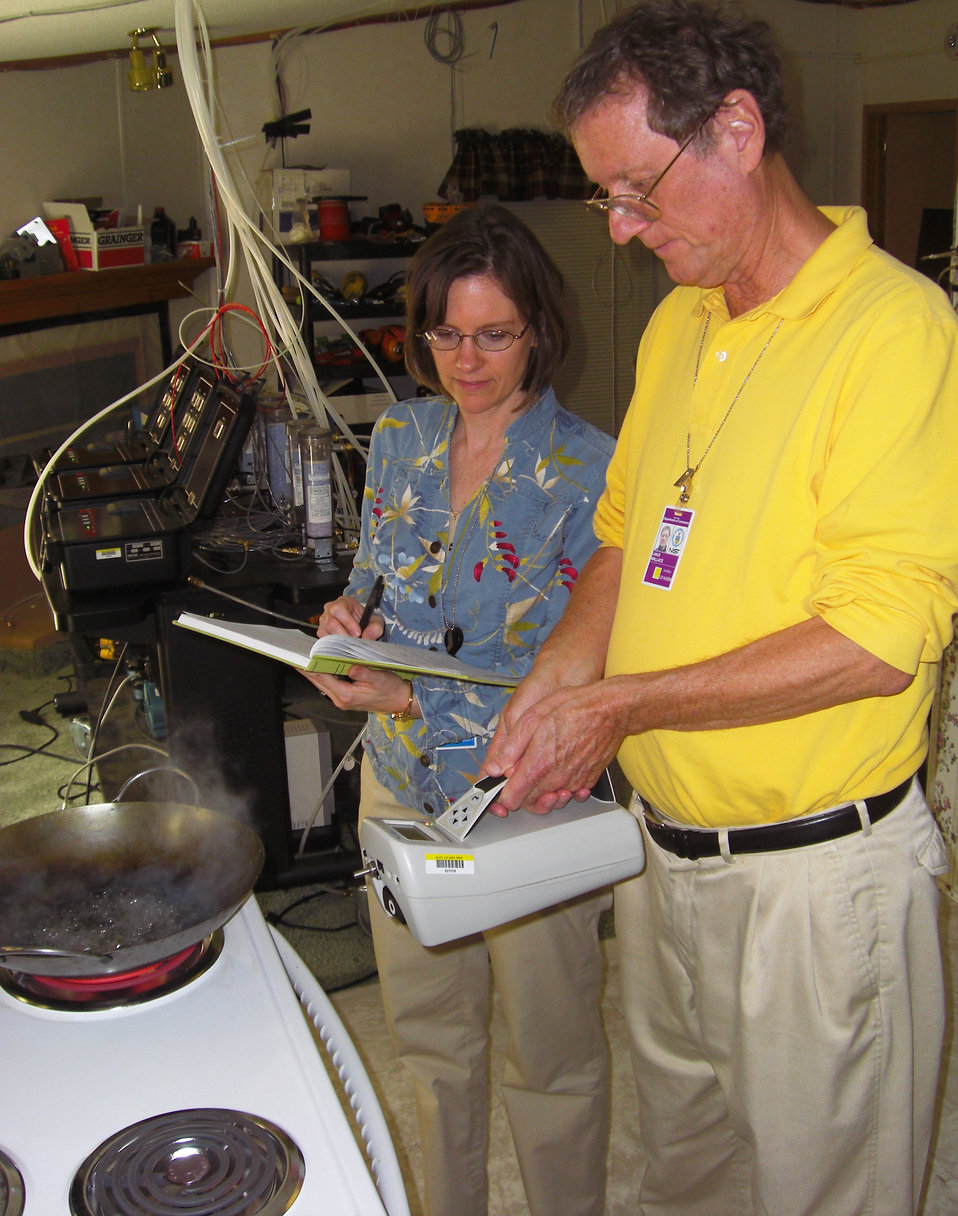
Nanoparticles

NIST researcher Cynthia Howard Reed and guest researcher Lance Wallace measure nanoparticles emitted by common household appliances. The new experiments can measure 'ultrafine particles' ranging in size from 2 to 10 nanometers.